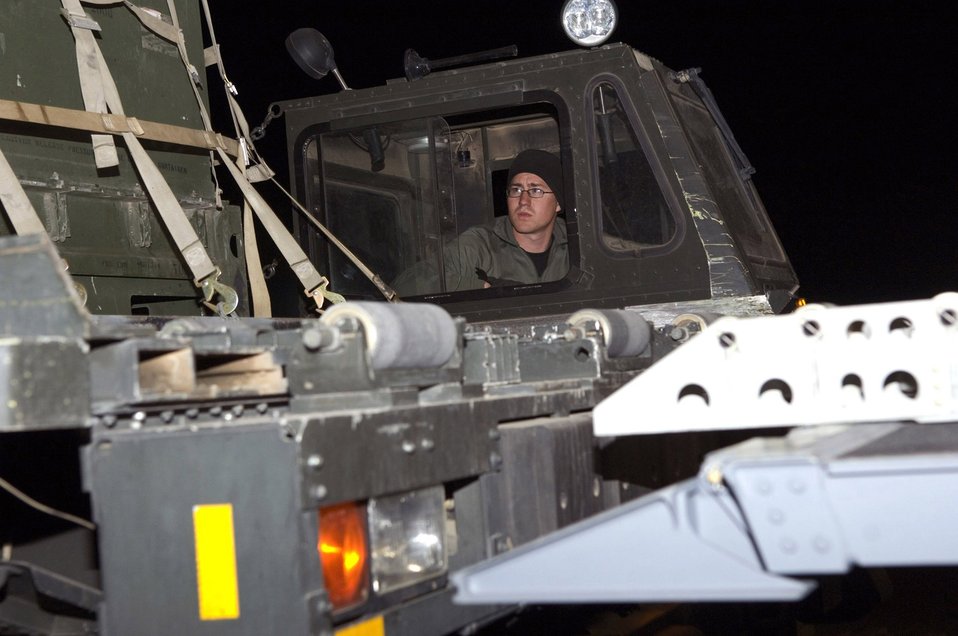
Balad aerial port bests cargo movement record

Senior Airman Jeff Johnson watches as the pallets come off the cargo loader onto an aircraft Dec. 8 at Balad Air Base, Iraq. The aircraft cargo loaders can move the cargo forward automatically, completing some of the grueling work often done by the aerial porters. Airman Johnson is a 332nd Expeditionary Logistics Readiness Squadron transportation specialist deployed from Altus Air Force Base, Okla.